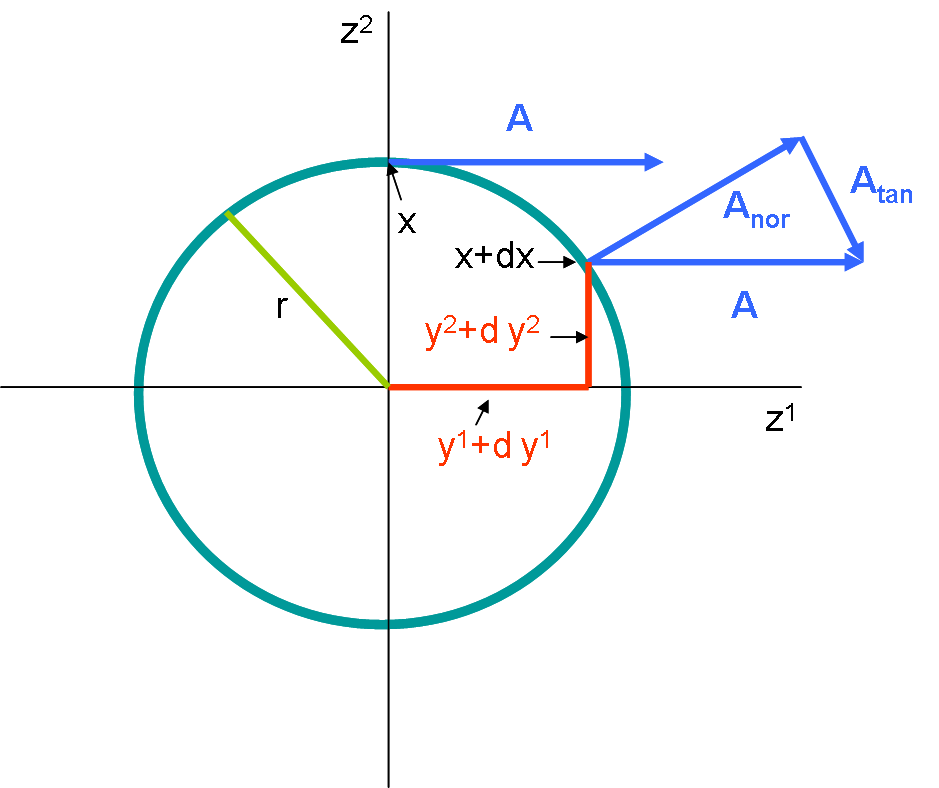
author = complexica